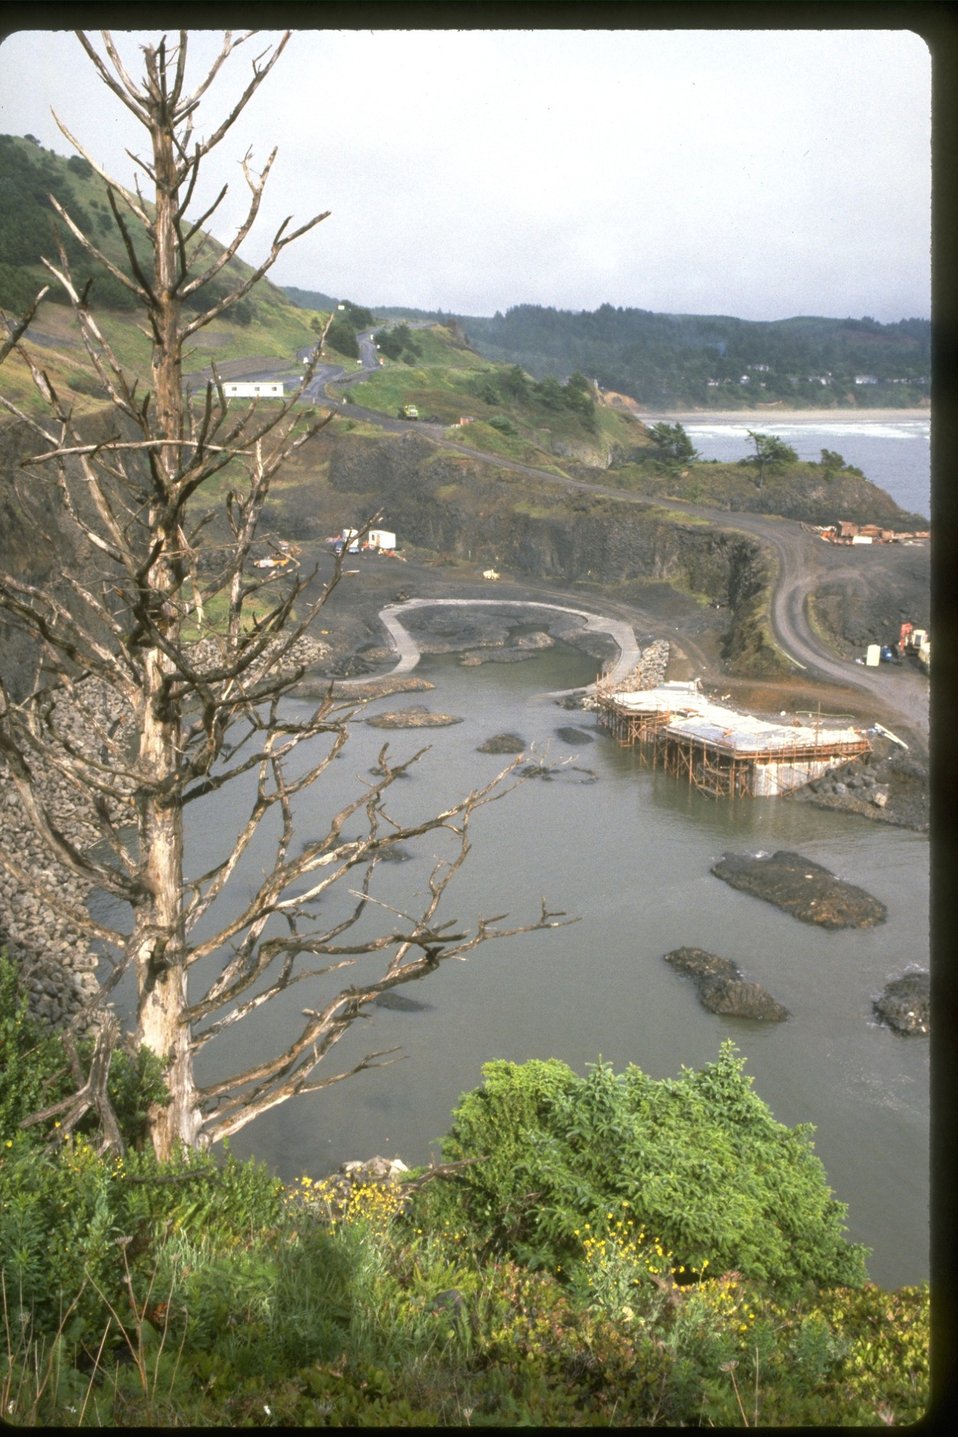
A shot of the construction at Quarry Cove from above, with a dead tree in the foreground.